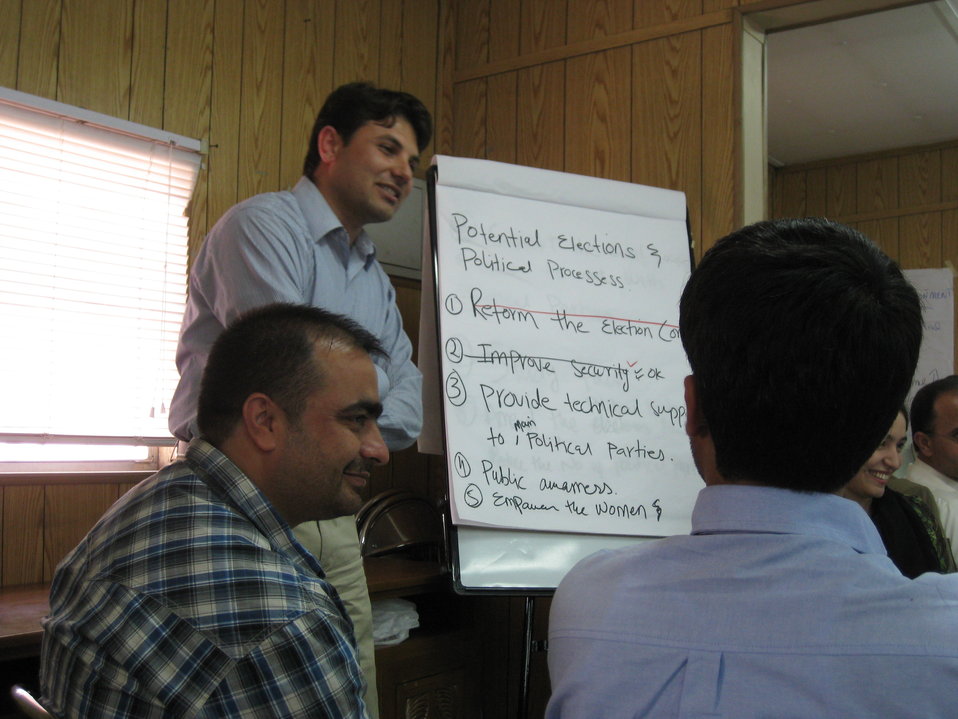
Afghan Youth Voices 042